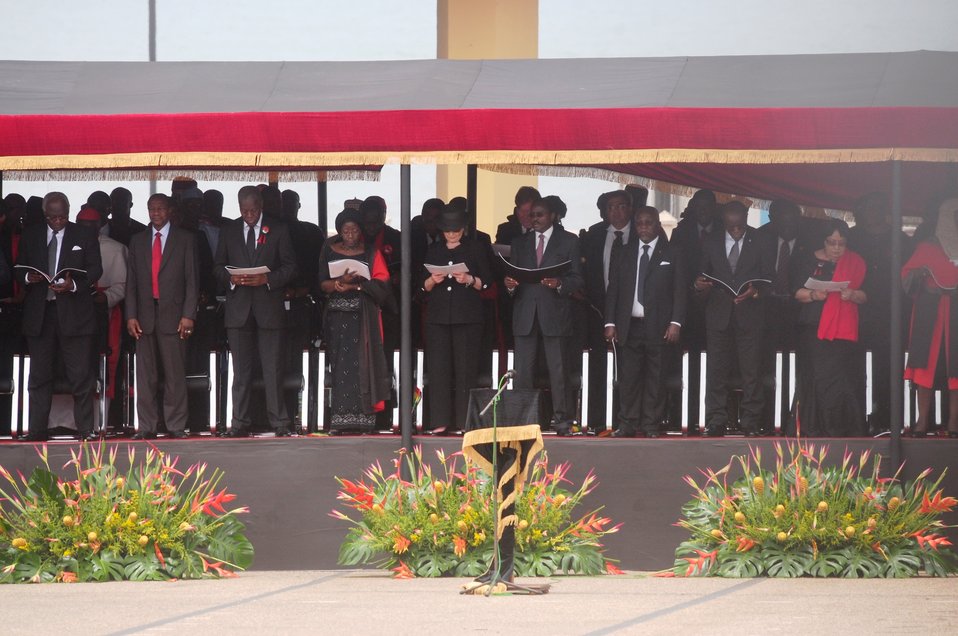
Secretary Clinton Pays Tribute to Ghanaian President Mills

U.S. Secretary of State Hillary Clinton joins thousands of Ghanaians for the Ghana State Funeral of President John Atta Mills in Accra, Ghana, on August 10, 2012.